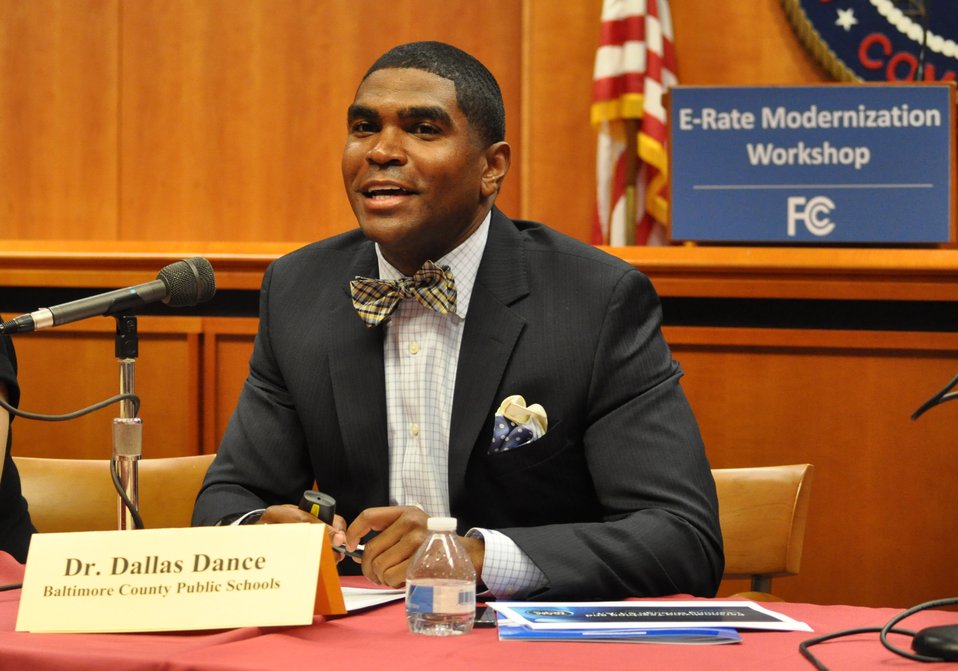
5.6.2014 E-Rate Modernization Workshop

Panel Discussion: Expanding Access to Wi-Fi for Schools and Libraries